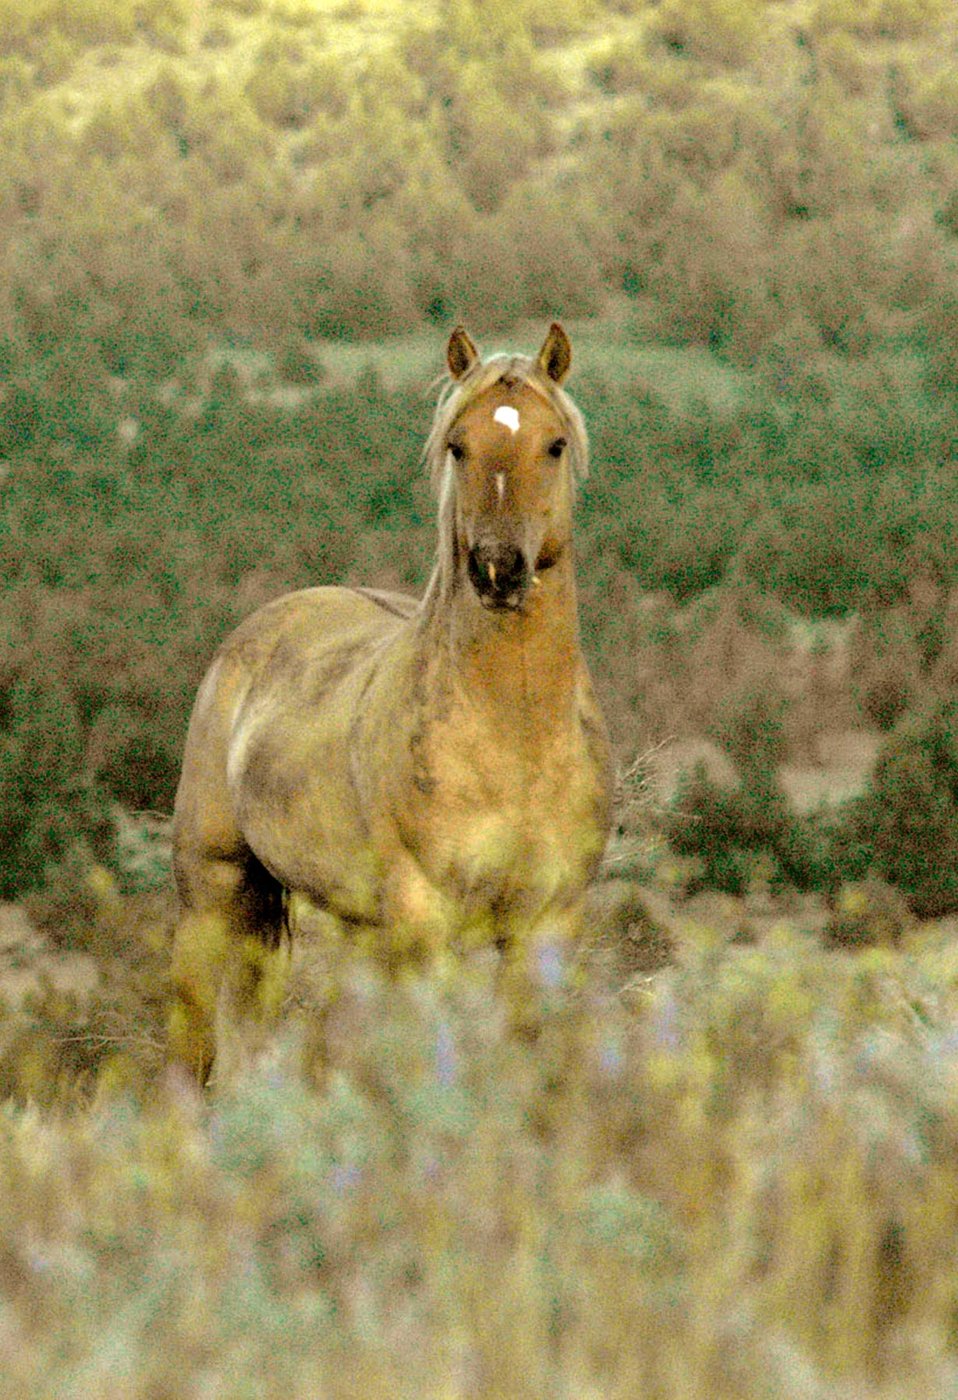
Kiger horses roam the plateaus of the Kiger Wildhorse Herd Management Area near Steens Mountain in Southeastern Oregon.